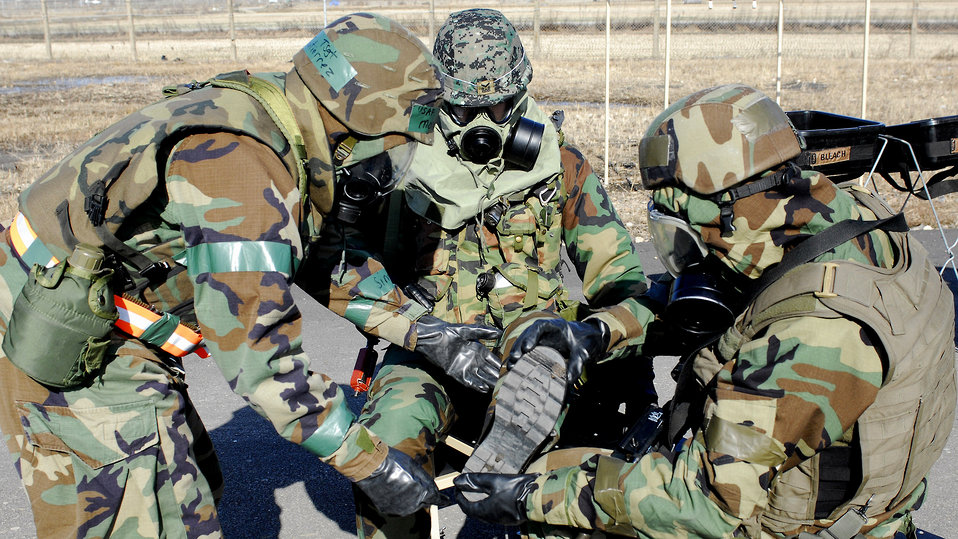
Squadron deployment tests Kunsan's readiness

8th Security Forces Squadron Airmen assist a South Korean army soldier with decontamination of his gears during a peninsula-wide operations readiness exercise Jan 16 at Kunsan Air Base, South Korea. South Korean army soldiers and 8th Security Forces Squadron members demonstrate the teamwork necessary to carry out the combined mission of the two allies stationed at Kunsan AB.